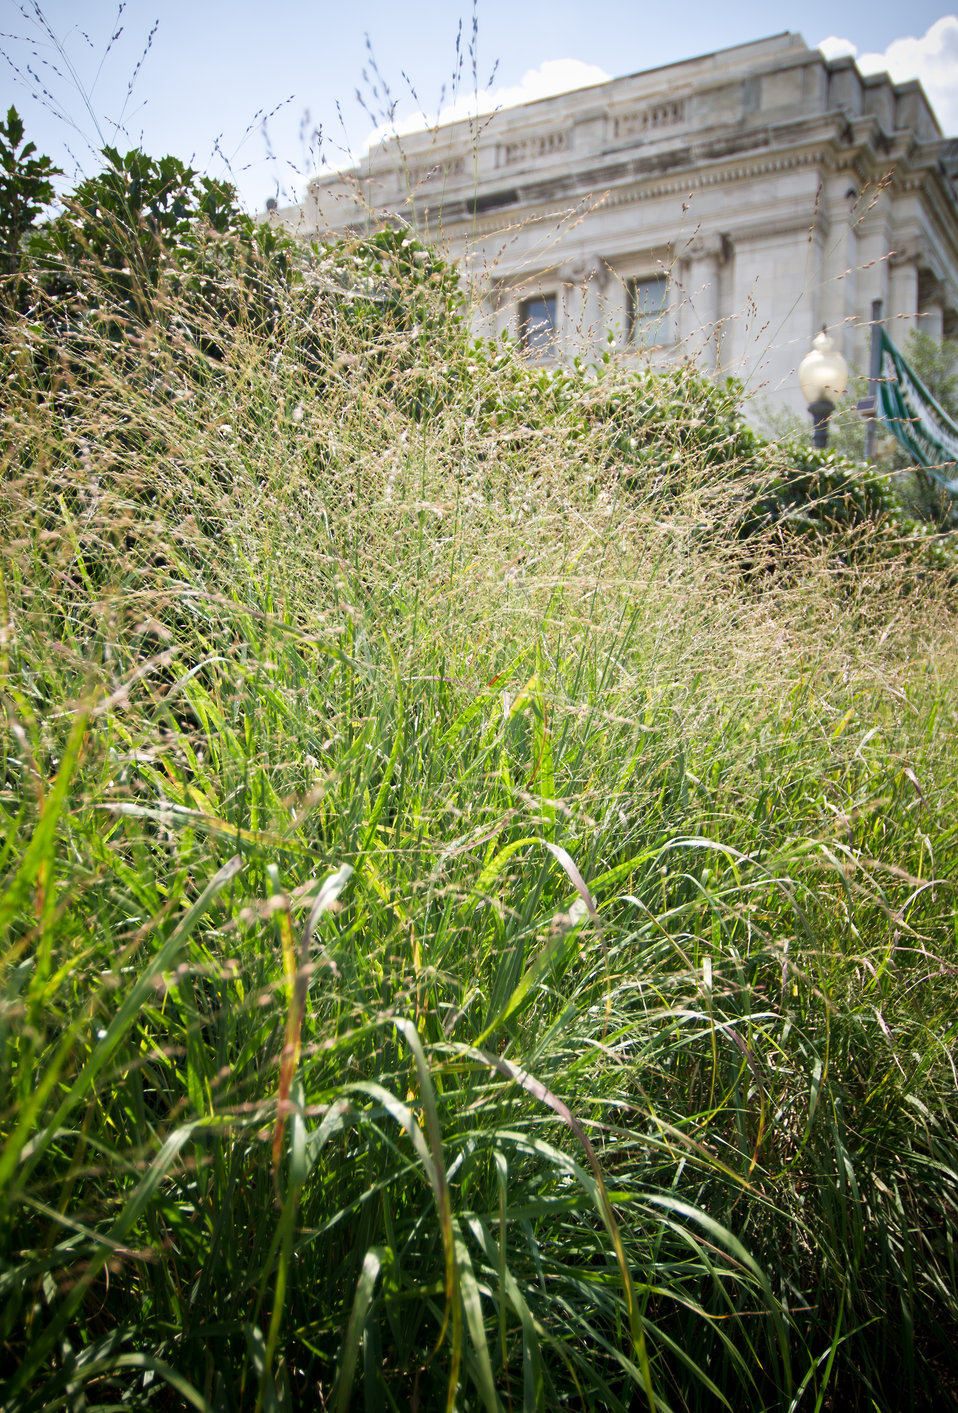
Switchgrass is both a perennial and self-seeding crop and farmers do not have to plant and reseed after annual harvesting. An established switchgrass stand can survive for ten years or longer. Unlike corn, switchgrass can grow on marginal lands and requires relatively modest levels of chemical fertilizers. Overall, it is considered a resource-efficient, low-input crop for producing bioenergy from farmland. This photograph shows switchgrass growing in the People’s Garden at the U.S. Department of Agriculture (USDA), in Washington, DC, on Tuesday, Aug. 2, 2011.